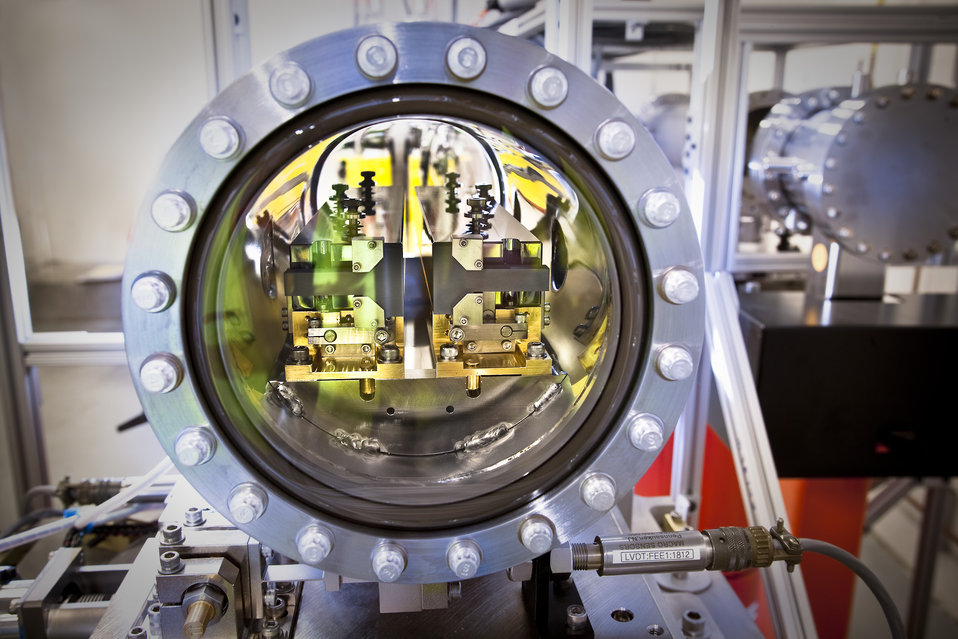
At SLAC National Accelerator Laboratory, a vacuum housing containing a pair of silicon x-ray mirrors used to deflect beam into the experimental stations. (LCLS front end enclosure).